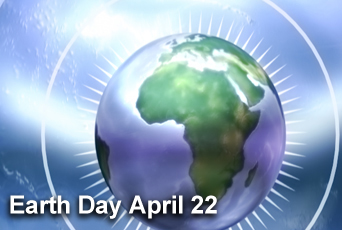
Earth Day

Blue suitors can celebrate Earth Day April 22 with the knowledge that they play an important role in keeping the world green.